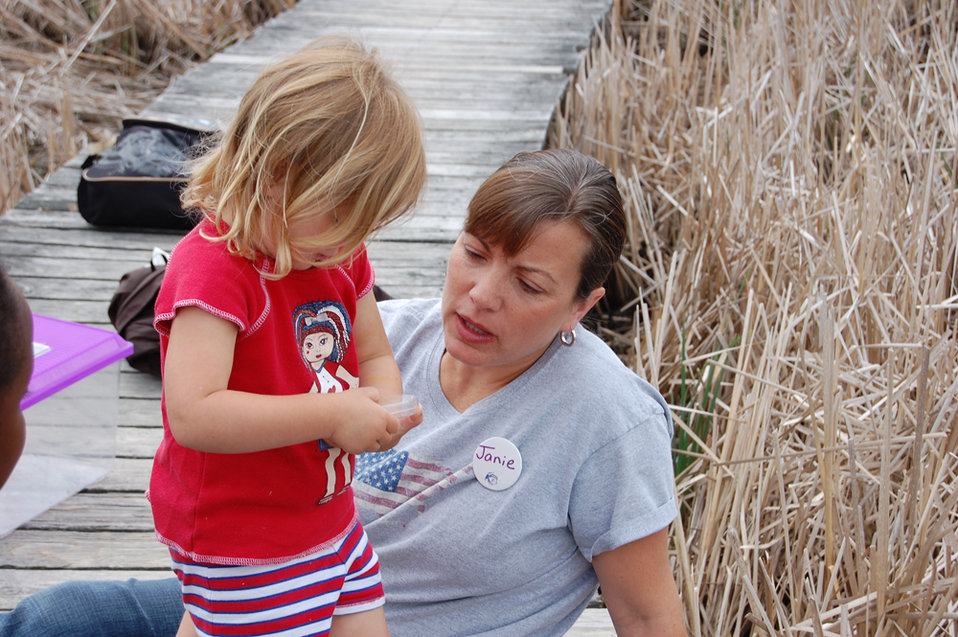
Sense of Wonder Camp

Sring 2009 session of the Sense of Wonder Camp, a camp for children ages 3-4 at Parker River National Wildlife Refuge.Credit: Kate Toniolo/USFWS